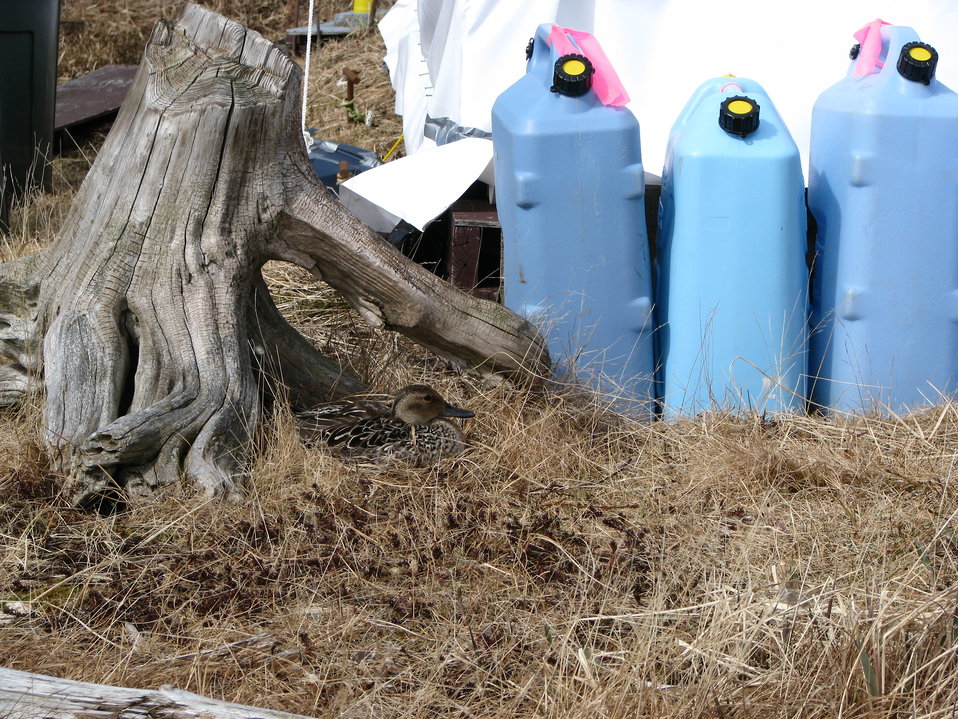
Pintail at camp

This female found the perfect spot for her nest. It was well protected from the wind thanks to the giant piece of drift would and the weathport. The daily camp traffic that occurred did not seem to disturb her to bady, as she ended up hatching 9 ducklings!

USFWS Yukon Delta NWR